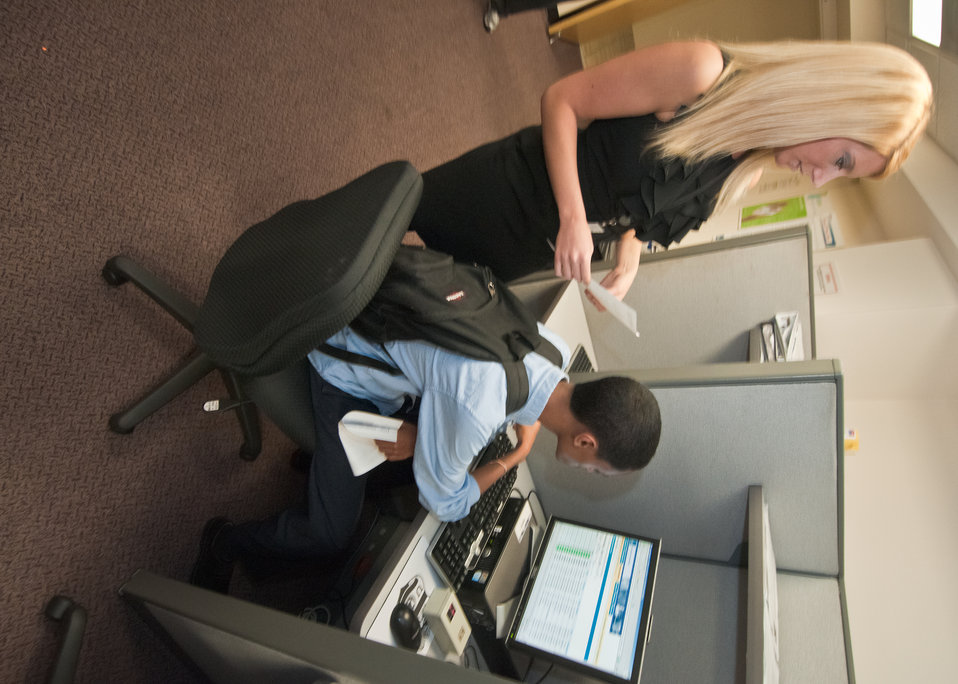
Lindsay Howell, Smart Card ID Analyst assists Nebil Maeruf with the application for the Smart Card during the United States Department of Agriculture (USDA) Information Technology Job Shadow Day on Wednesday, April 13, 2011. USDA holds the Information Technology Job Shadow Day annually. It is an opportunity for students from local high schools to learn the breadth and depth of information technology at USDA and how it is applied the department. Students toured the Network Operations Center, the Badging Office and had a lecture on geospatial technology.